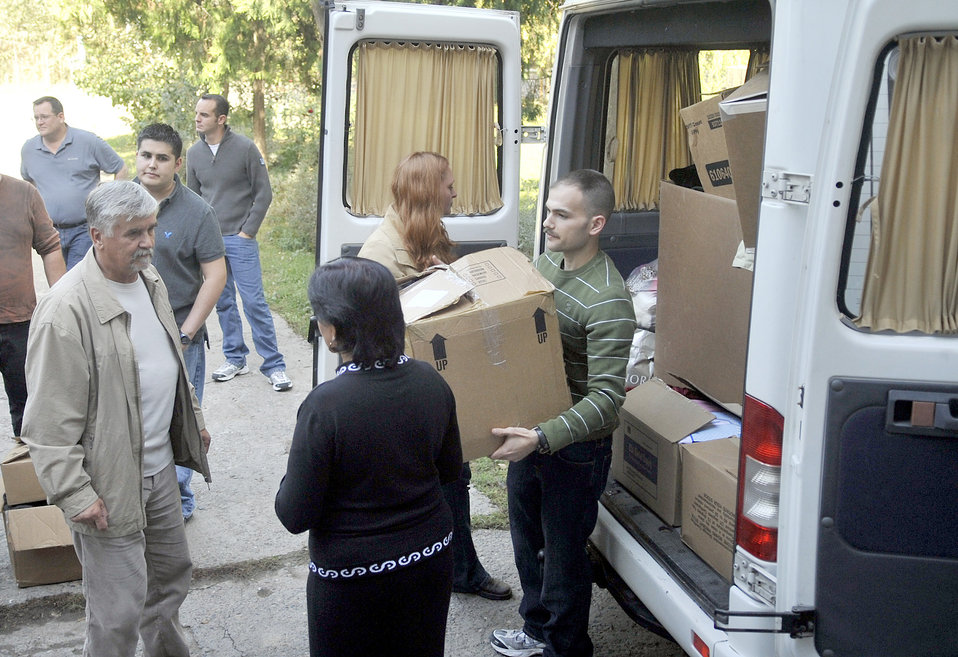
Kyrgyzstan school

Airmen unload boxes of coats and blankets Oct. 18, 2010, at the Solnyshko school near Vasilievka, Kyrgyzstan. Several Airmen who are deployed to the Manas Transit Center, Kyrgyzstan, visited the school to deliver cold weather items and spend time with the kids. Airmen have been coming to Solnyshko since 2005.